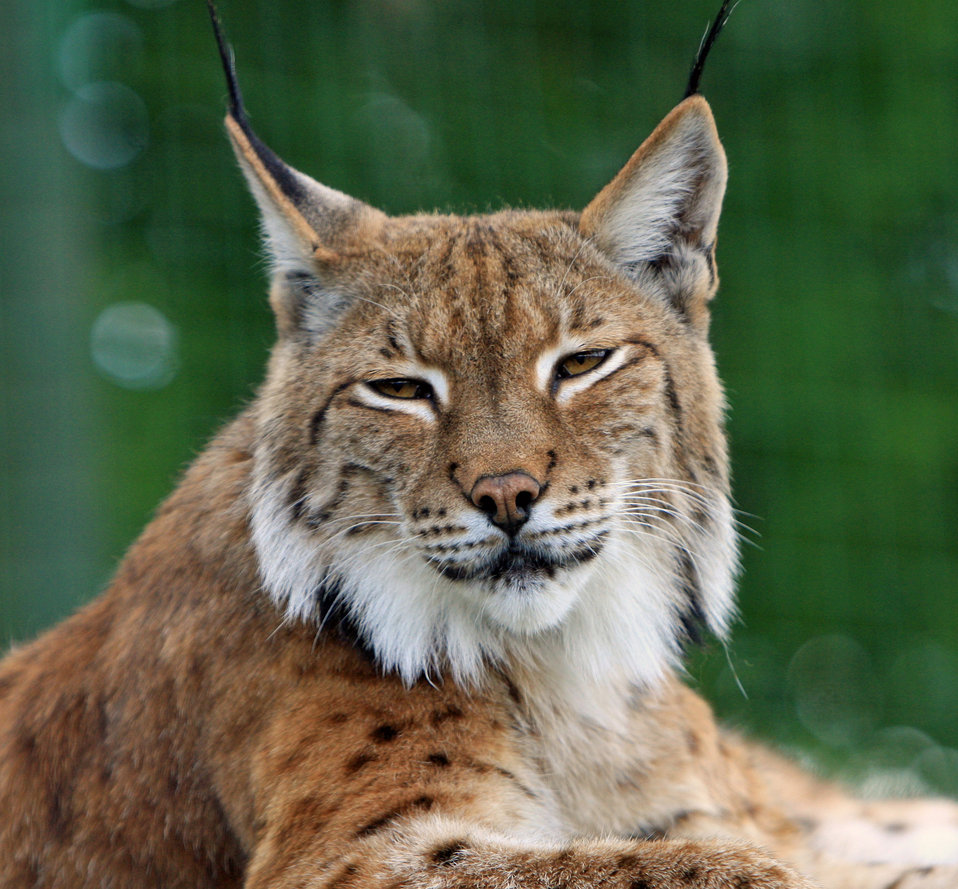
Bobcat or lynx

Close-up portrait of a beautiful bobcat or lynx head.